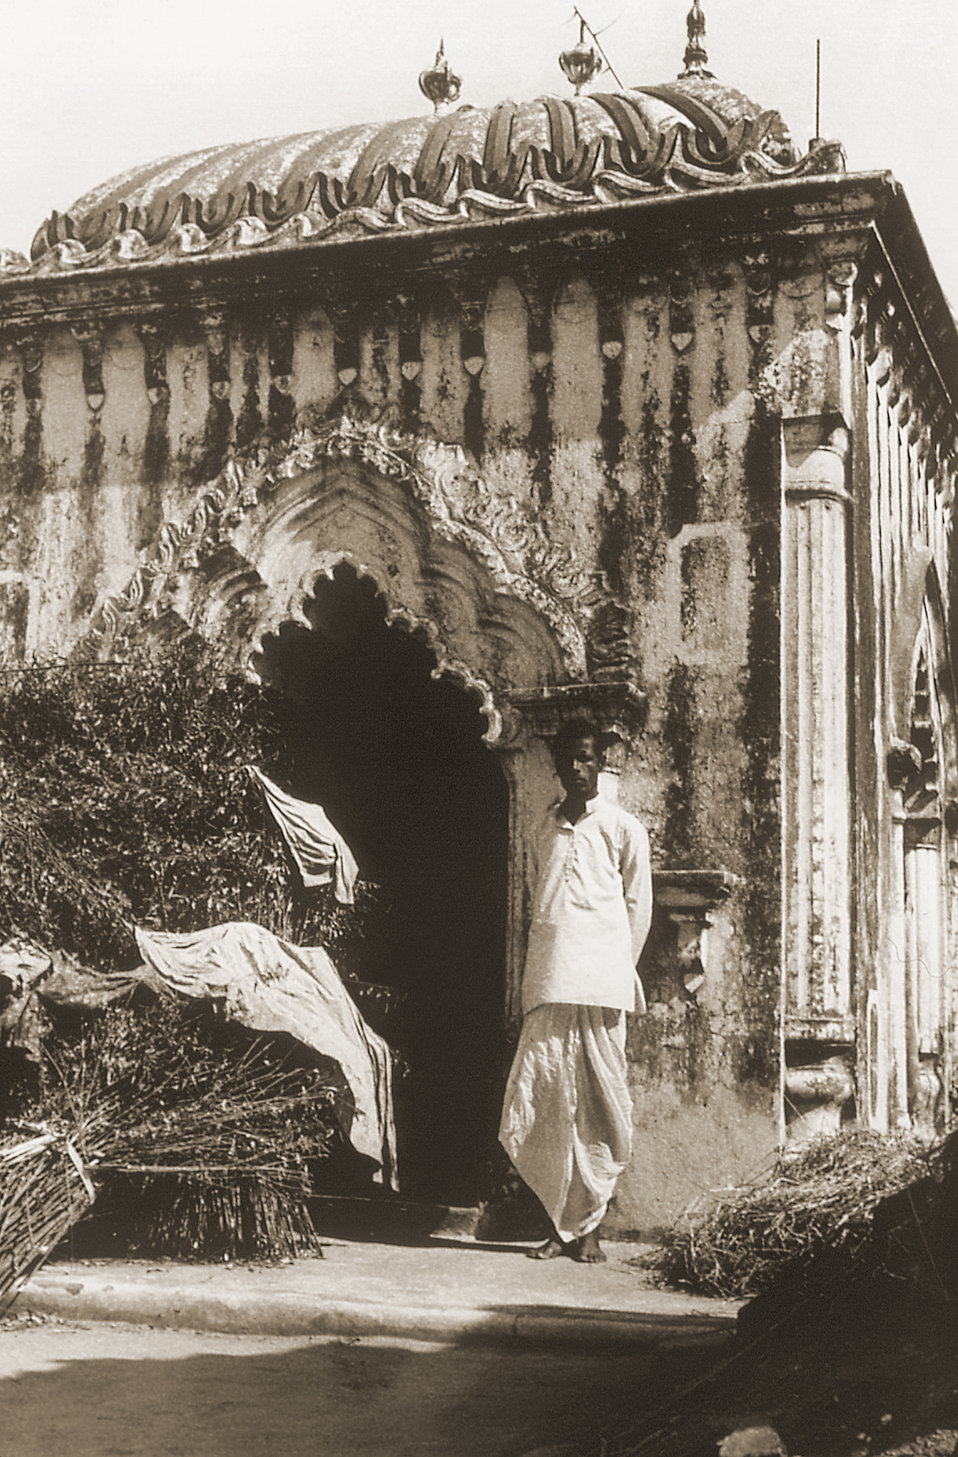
Standing outside the edifice, this 1975 image depicts the son of Pawapuri, or Pava, homeowner, who'd built a small temple in the name of his Jain religion. The Pawapuri is located in the Nalanda district in the Indian state of Bihar,